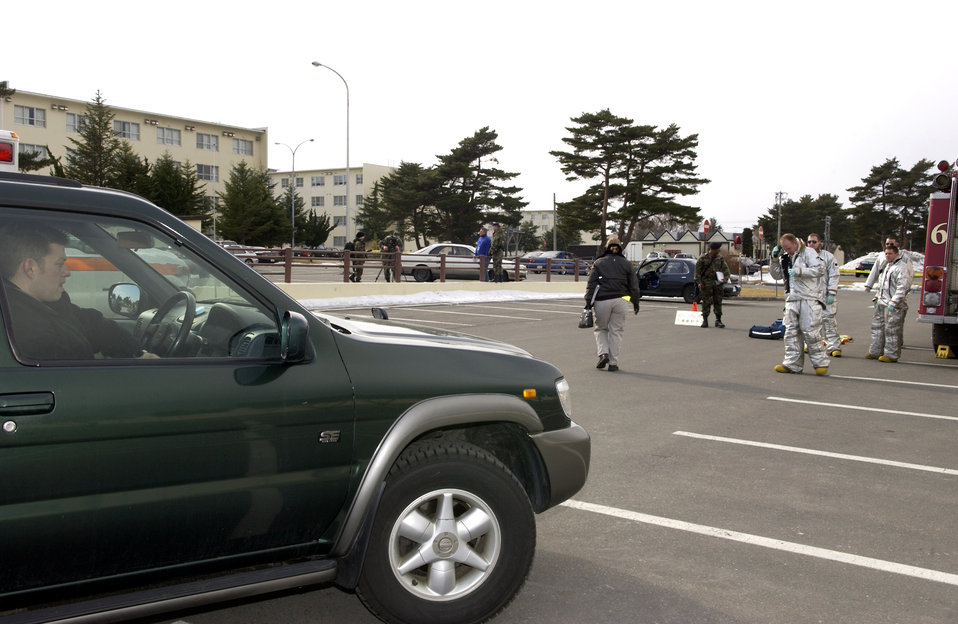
Military photographers key to training, investigations

This photograph of an exercise scenario was taken by an Air Force photographer for investigation purposes. Photos such as these are used by evaluators to assess strong points and weaknesses in the performance of Airmen responding to a scenario.